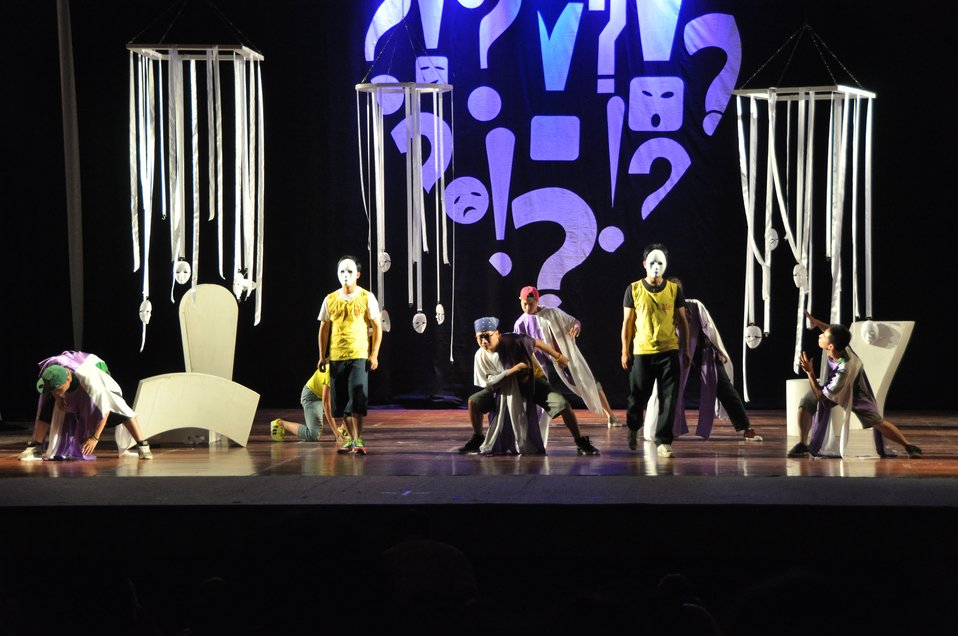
PEPFAR Musical Questions and Exclamations

Hanoi, May 17, 2013